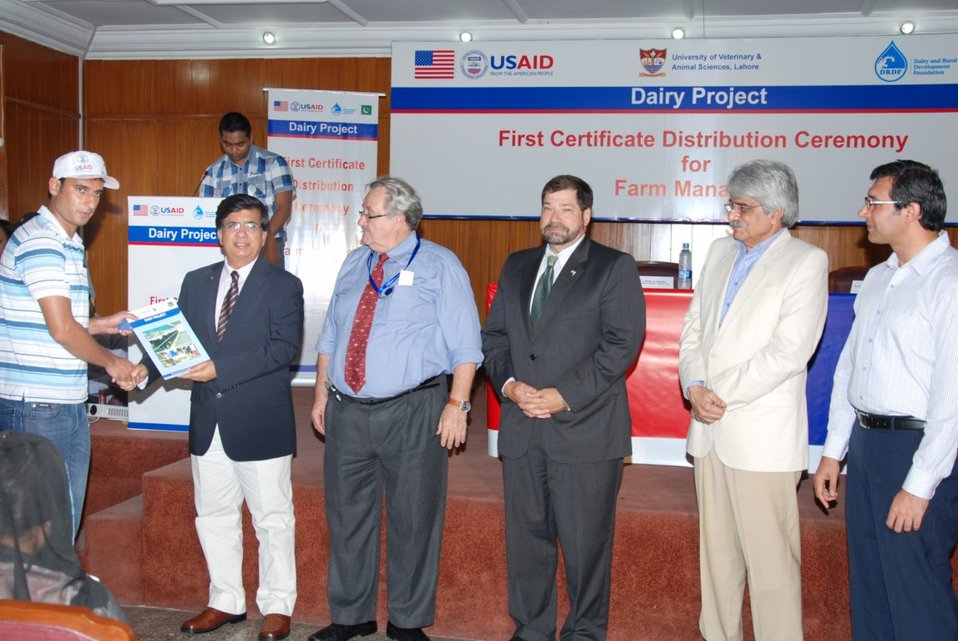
2 - VC UVAS Mr. Tallat Naseer Pasha awarding certificate to USAID Dairy Project-trained dairy farm managers